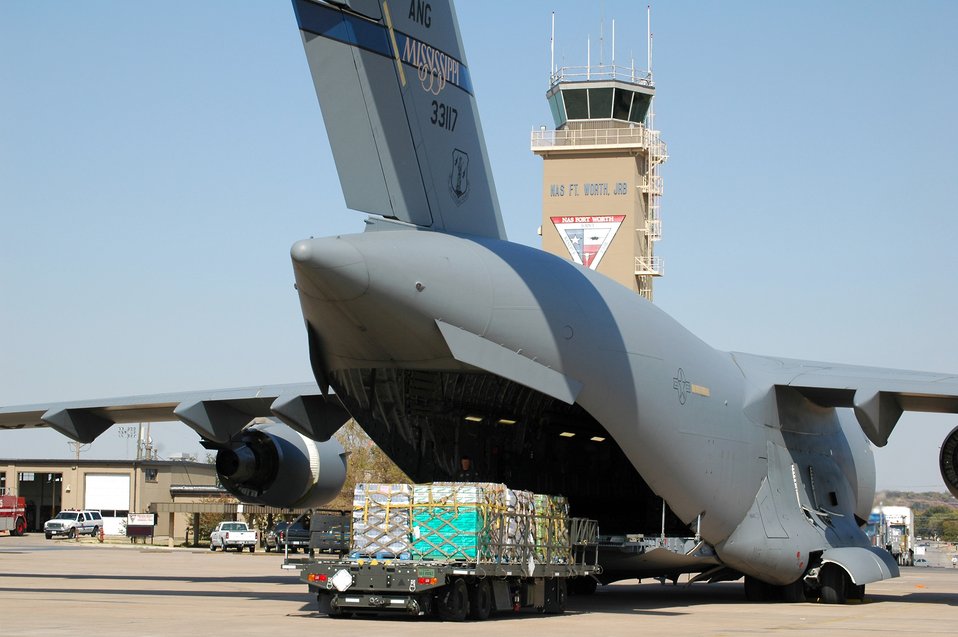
Hurricane Wilma

NAVAL AIR STATION - JOINT RESERVE BASE, FORT WORTH, Texas -- Pallets of food and water are loaded onto a C-17 Globemaster III here for delivery to Florida. As part of a joint effort, Airmen, Sailors and Defense Department civilians assisted the Federal Emergency Management Agency in Hurricane Wilma relief operations Oct. 27.